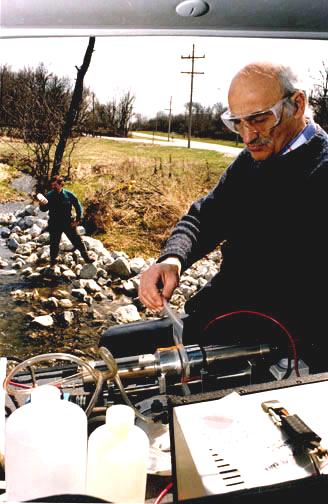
ENVIRONMENTAL SCIENTIST TESTING WATER AT ARGONNE USING AN INNOVATIVE PROCESS.

THIS PROCESS, DEVELOPED WITH ARGONNE, 3M AND IBC ADVANCED TECHNOLOGIES, ELIMINATES UP TO 90% OF THE STEPS PREVIOUSLY NEEDED TO TEST WATER AT DOE SITES AND NUCLEAR POWER PLANTS.